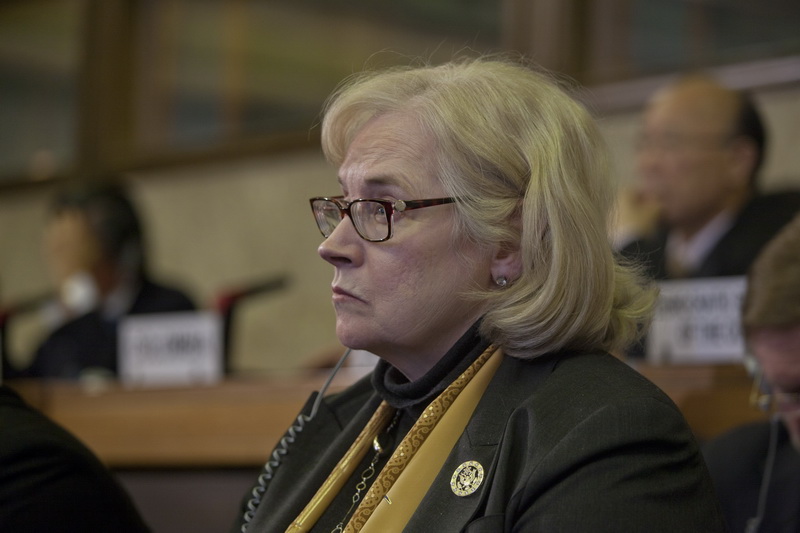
Ambassador Kennedy Listens to Assistant Secretary Gottemoeller Deliver Remarks

Laura Kennedy, U.S. Ambassador to the Conference on Disarmament, listens to Rose E. Gottemoeller, Assistant Secretary of State for Arms Control, Verification and Compliance, deliver the opening statement for the United States at the First Plenary of the 2012 Session of the Conference on Disarmament in Geneva, Switzerland, on January 24, 2012.